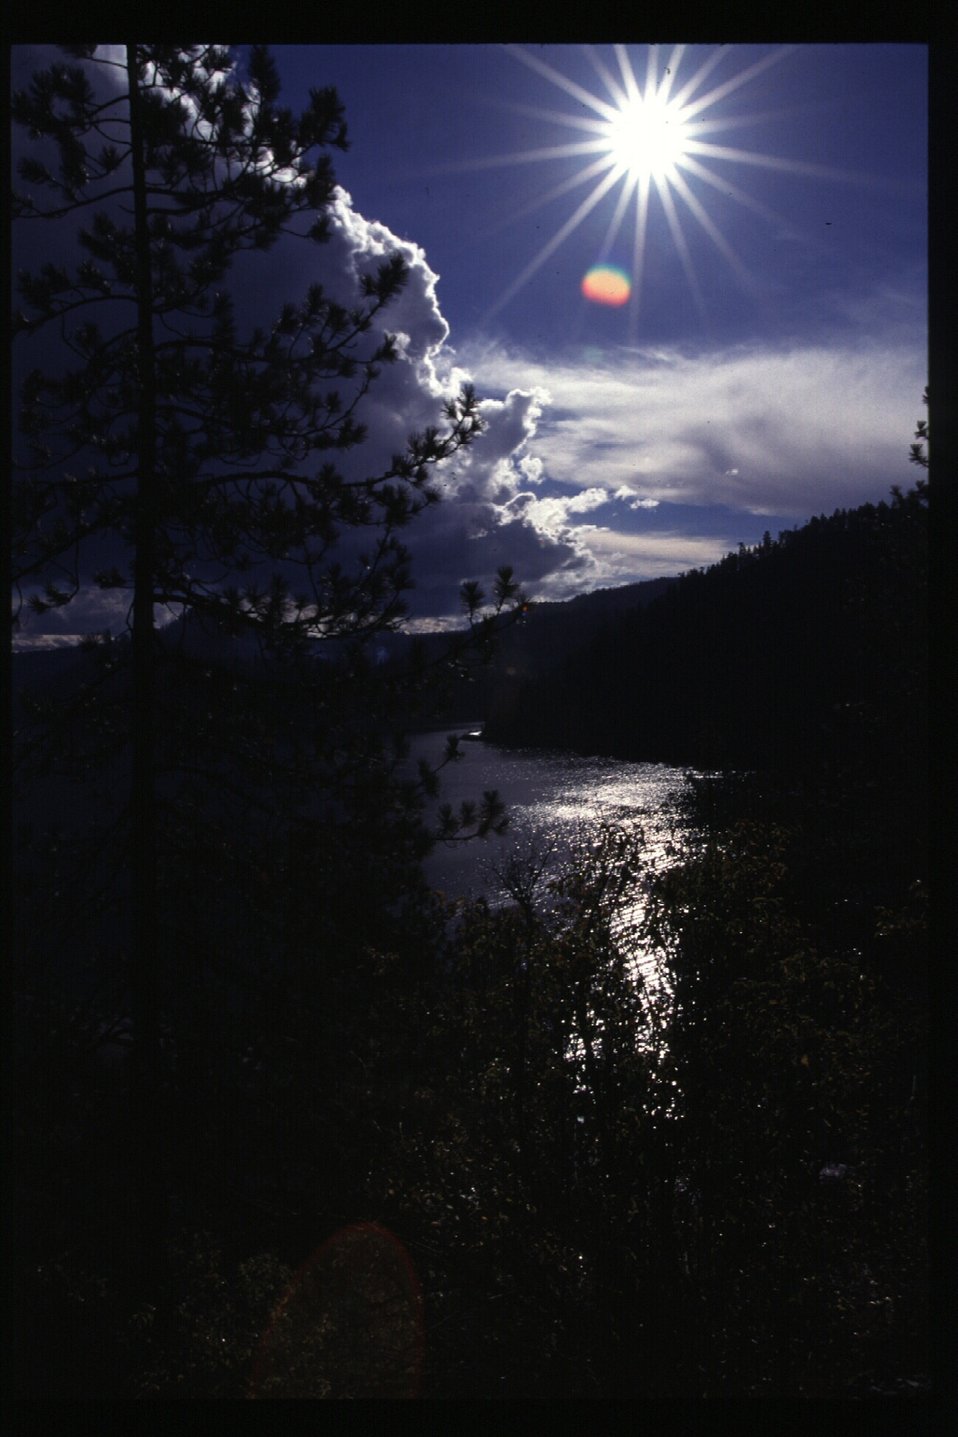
Scenic view from Beauty Bay Couer d'Alene Field Office UCSC Upper Columbia Salmon Clearwater District